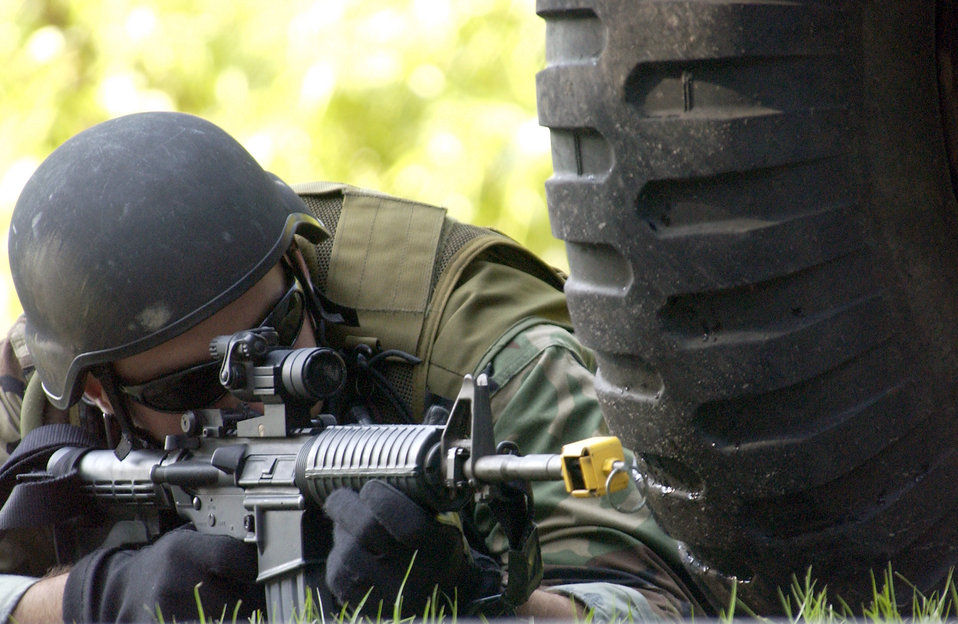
Lay low

AVON PARK AIR RANGE, Fla. -- An Air Force explosive ordnance and device specialist from the 820th Airborne Red Horse Squadron at Nellis Air Force Base, Nev., provides security for a suicide-bomber scenario at an entry control point during exercise Safe Flag here recently.